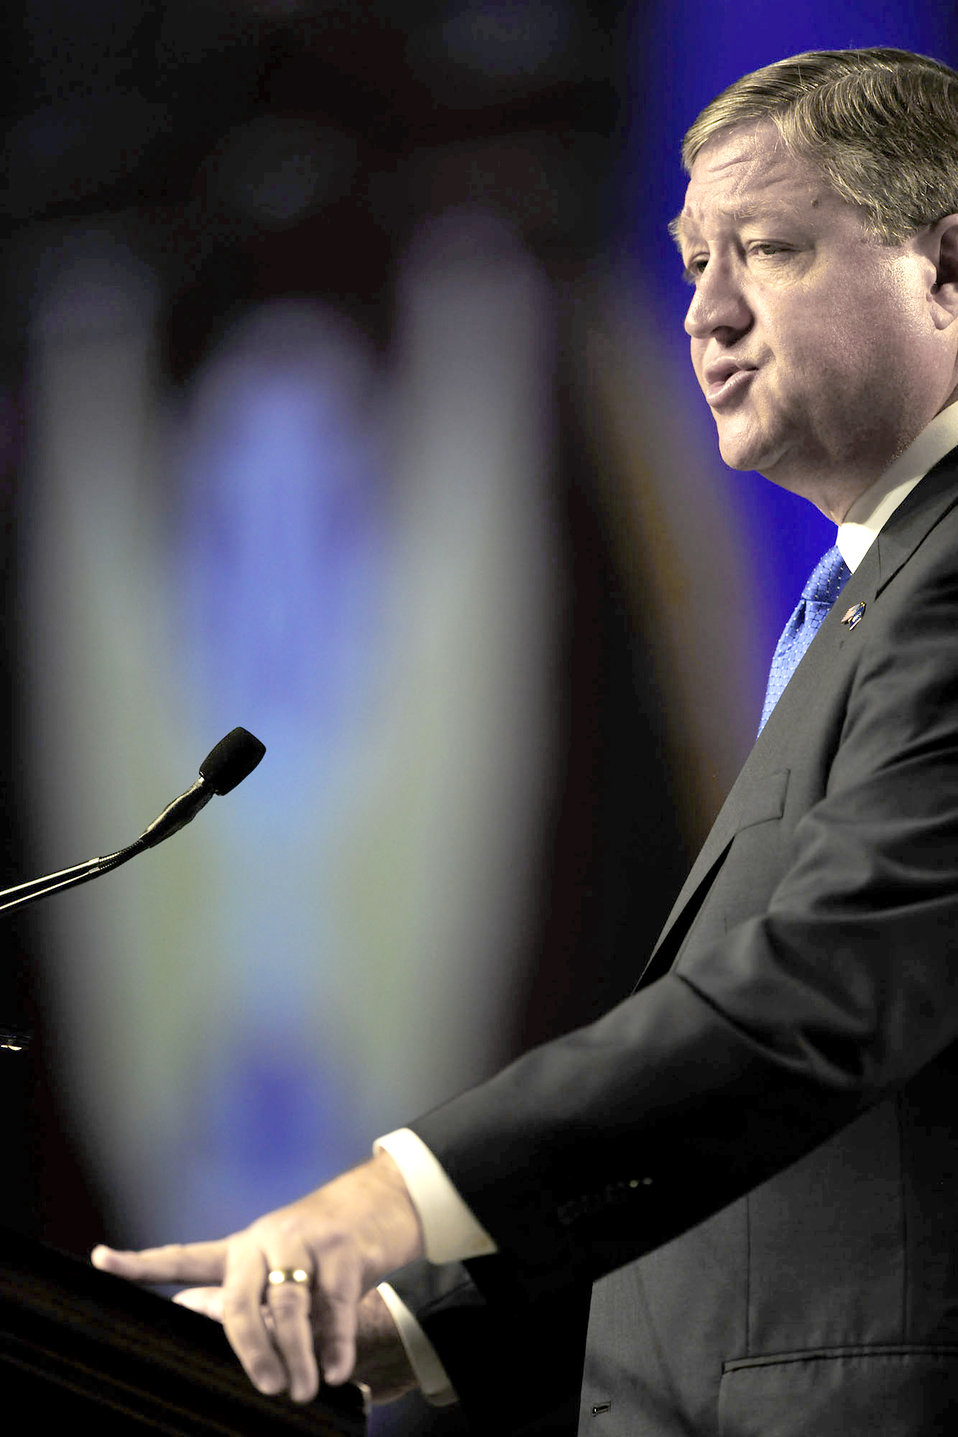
Secretary of the Air Force Michael Donley delivers his keynote speech during the opening morning of the Air Force Association's Air & Space Conference and Technology Exposition, Sept. 13, 2010, in National Harbor, Md. Among several points, the secretary summed up some of the highlights the Air Force accomplished during the year, such as the Year of the Air Force Family program.